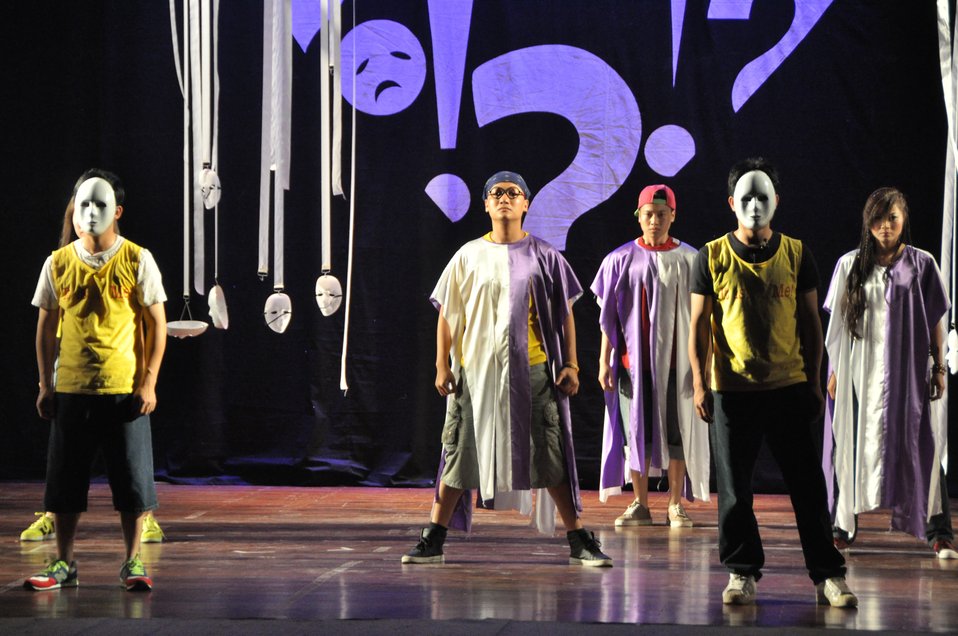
PEPFAR Musical Questions and Exclamations

Hanoi, May 17, 2013